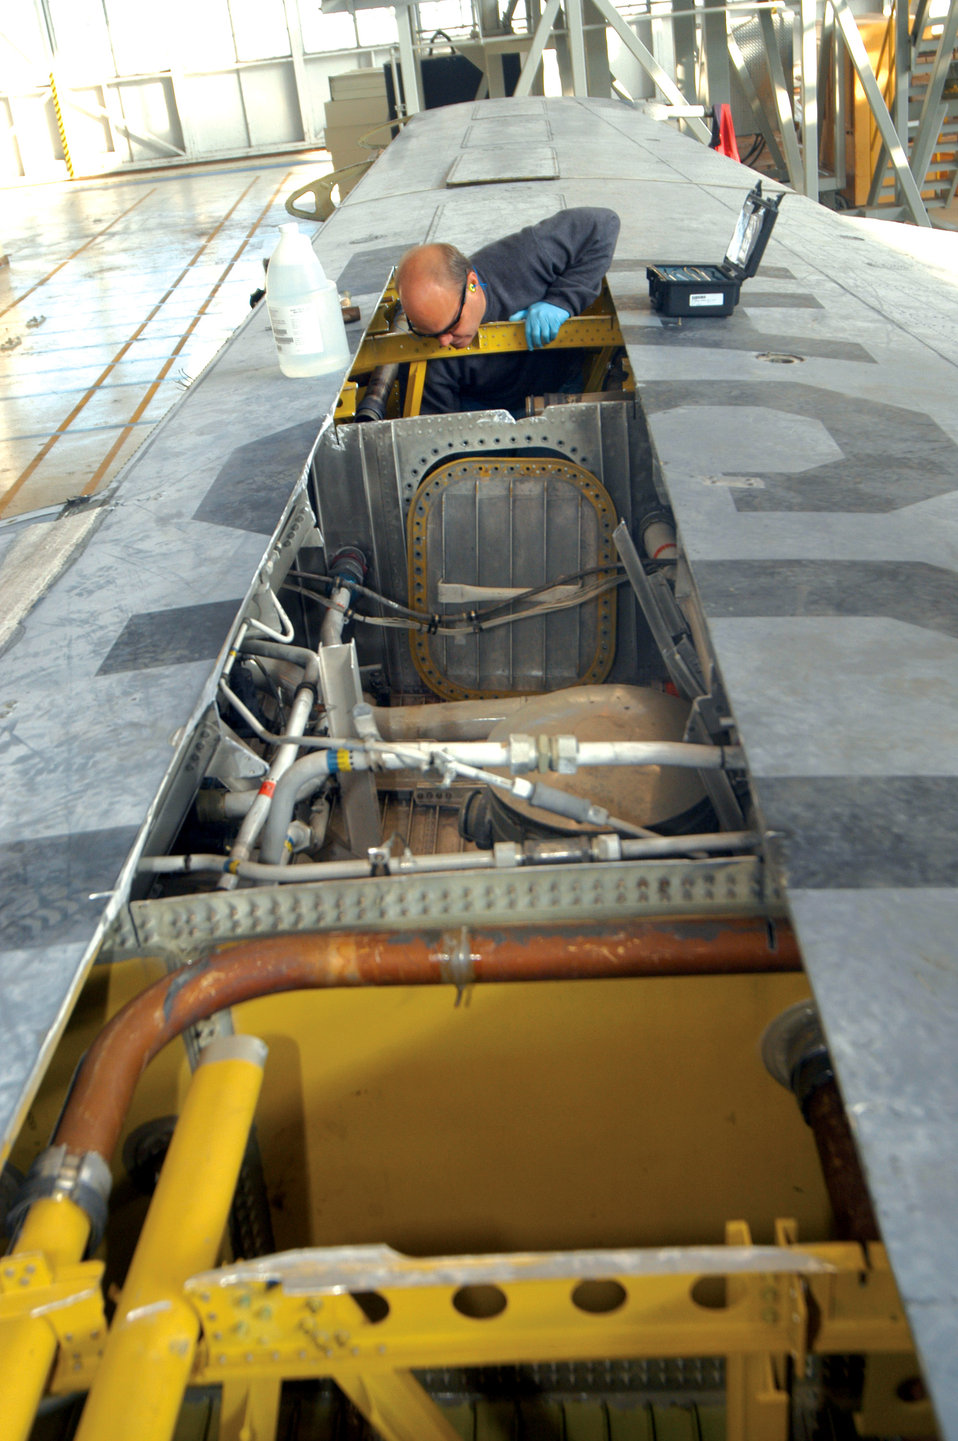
Cooperative effort nets C-130 wing for hands-on training

Michael Gayon does a seal repair inside of a fuel tank on the C-130 Hercules wing at Robins Air Force Base, Ga. Robins AFB units combined forces to procure a wing so students of the 373rd Training Squadron's Field Training Detachment could have hands-on training.